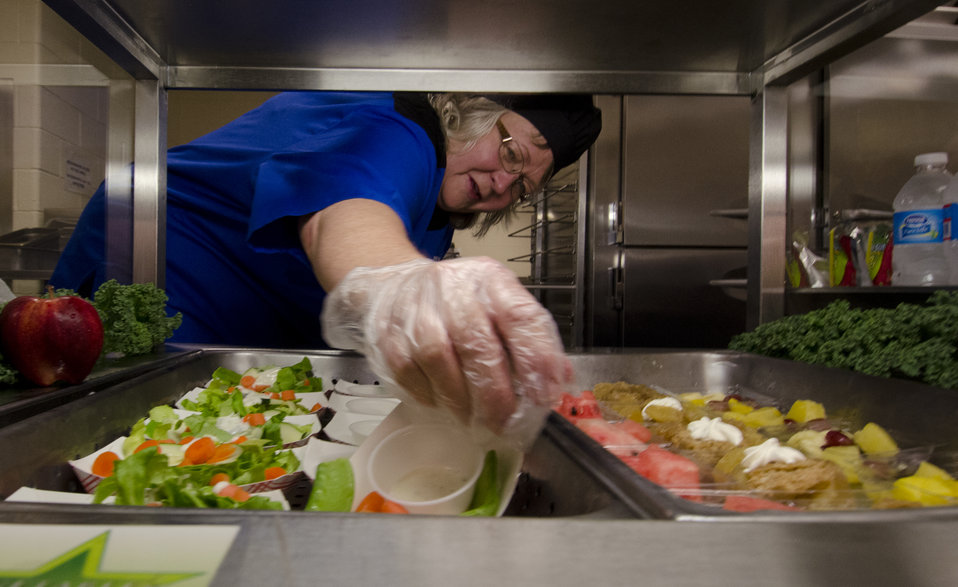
School lunch staff and students enjoy the new school lunch menu created to meet the new standards at the Yorkshire Elementary School in Manassas, VA on Friday, Sept. 7, 2012.